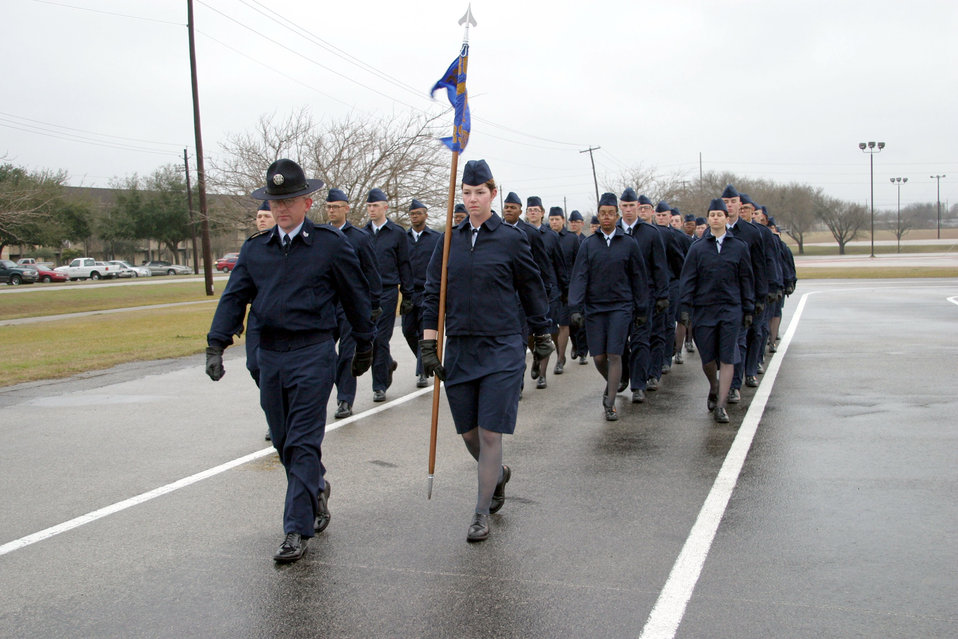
Mission-ready Airmen

LACKLAND AIR FORCE BASE, Texas -- Airmen are taught from the beginning of basic training that, from uniforms to marching, attention to details are and will continue to be important in the Air Force.